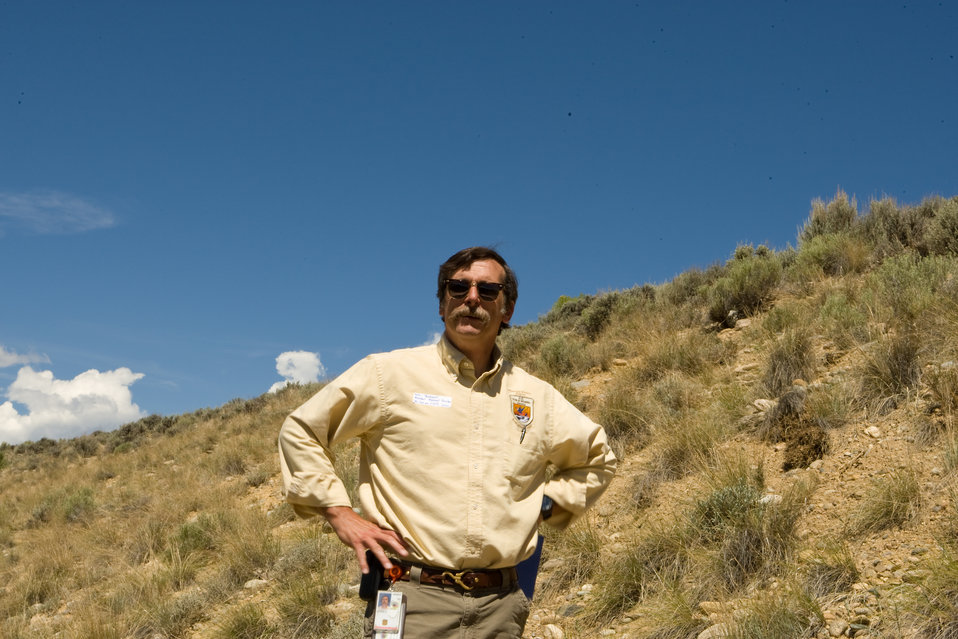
Colorado Rare Plant Conservation Initiative

The Colorado Rare Plant Conservation Initiative (RPCI) is a partnership of 23 statewide and regional agencies, private organizations, and academic institutions working to conserve 121 rare plants in Colorado. As part of these efforts the group developed the Colorado Rare Plant Conservation Strategy, developed Best Management Practices to reduce energy development impacts, addressed climate change, and developed focused strategies for the conservation of individual species at eight priority landscapes. The group has also worked to coordinate volunteer efforts for plant conservation across the state.